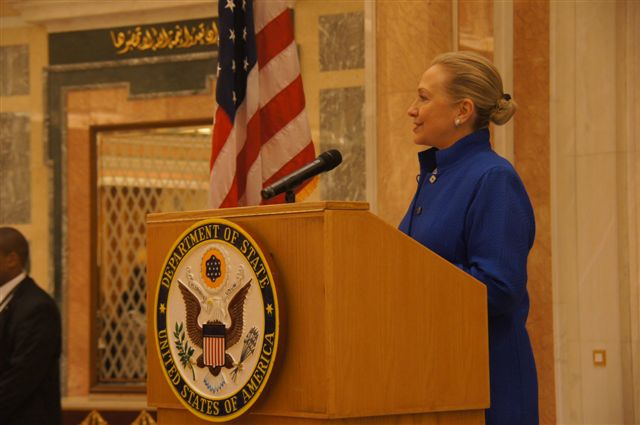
Secretary Clinton in Riyadh

Secretary of State Hillary Rodham Clinton delivers remarks to U.S. Embassy staff and their families in Riyadh, Saudi Arabia, March 31, 2012.